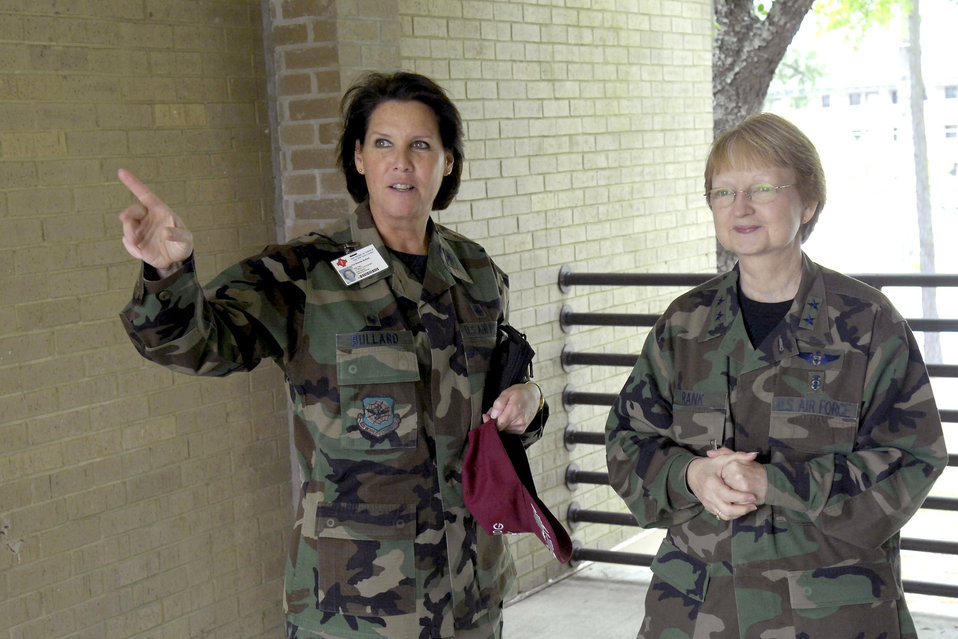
General discusses future of medical services

Col. Brenda Bullard shows Maj. Gen. Melissa Rank around the medical facility April 19 at Pope Air Force Base, N.C. The general also visited Womack Army Medical Center on Fort Bragg, N.C., and the 43rd Aeromedical Evacuation Squadron. Colonel Bullard is the 43rd Medical Group commander and General Rank is the assistant Air Force surgeon general.